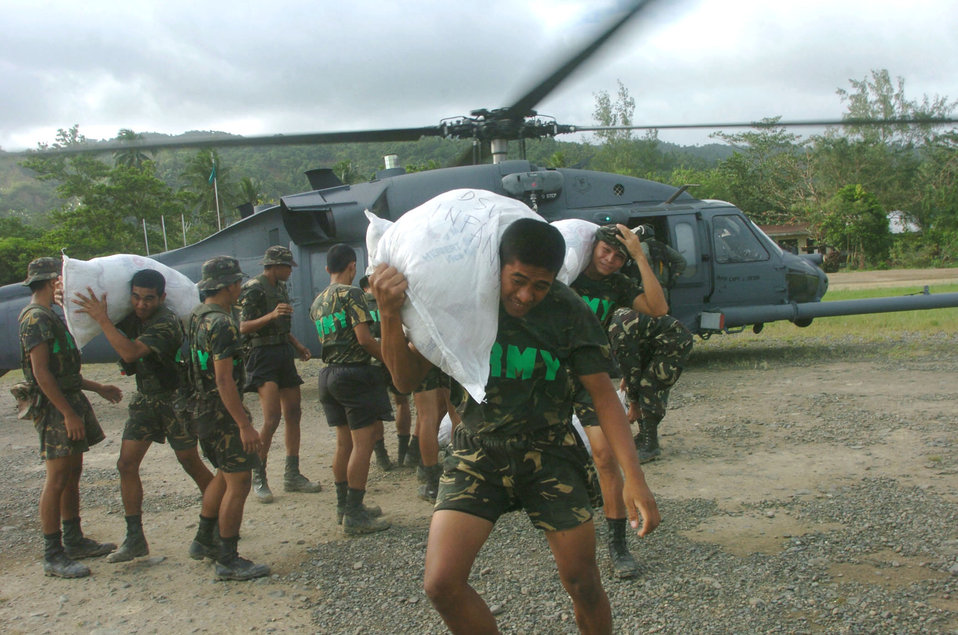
Kadena Airmen aid Philippine typhoon victims

REAL CITY, Philippines -- Philippine servicemembers unload sacks of canned goods, rice and flour here from an HH-60 Pave Hawk helicopter from the 33rd Rescue Squadron at Kadena Air Base, Japan. About 600 U.S. servicemembers are providing humanitarian assistance and typhoon relief to residents of Quezon Province where widespread flooding displaced about 168,000 people and left more than 1,400 dead or missing. Air Force and Marine helicopters are flying daily missions to the stricken areas.